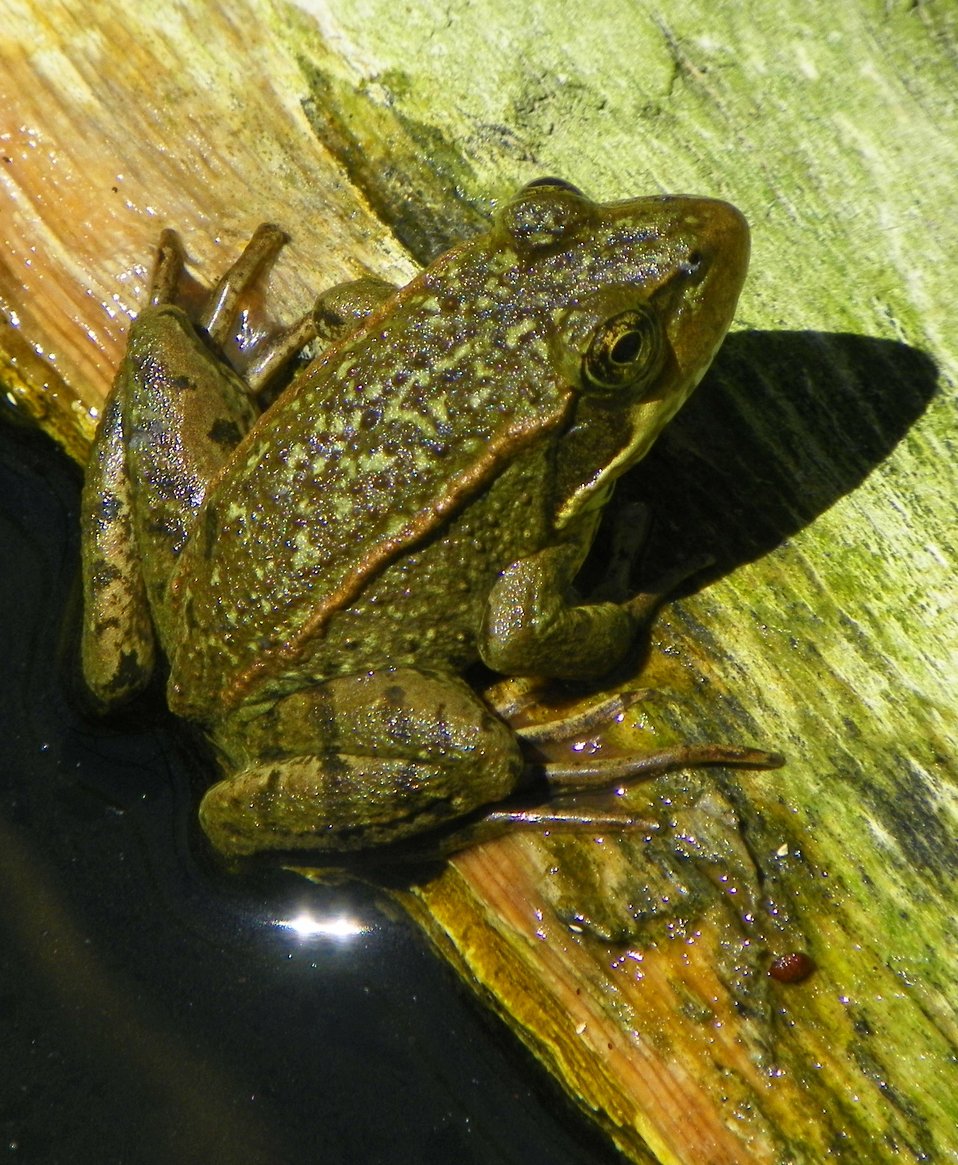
California Red Legged Frog

Photo Credit: Flo Gardipee/USFWS

Species protected by the Santa Clara Valley Habitat Conservation Plan